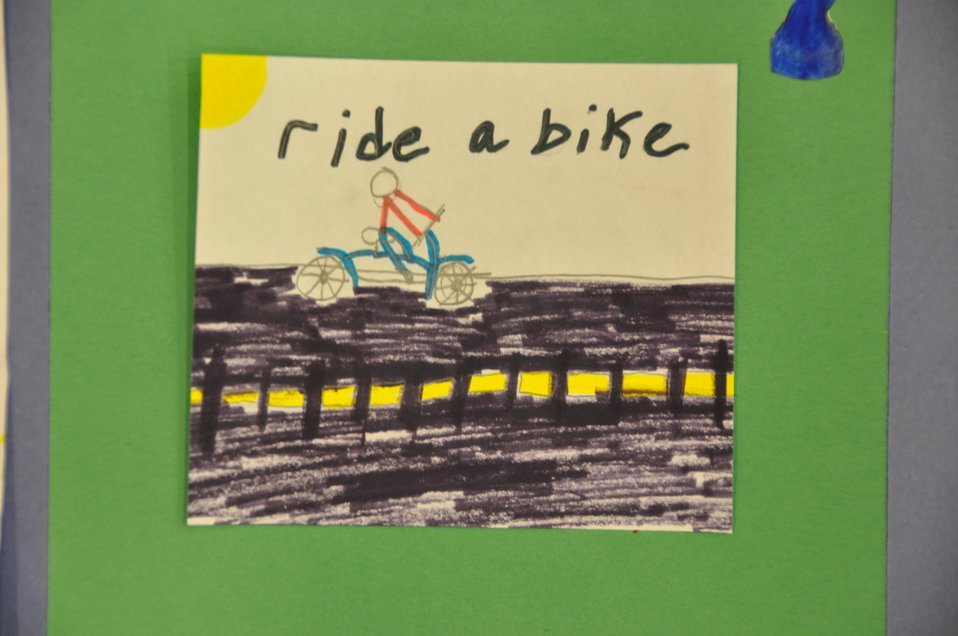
6th Grade, New Hampshire